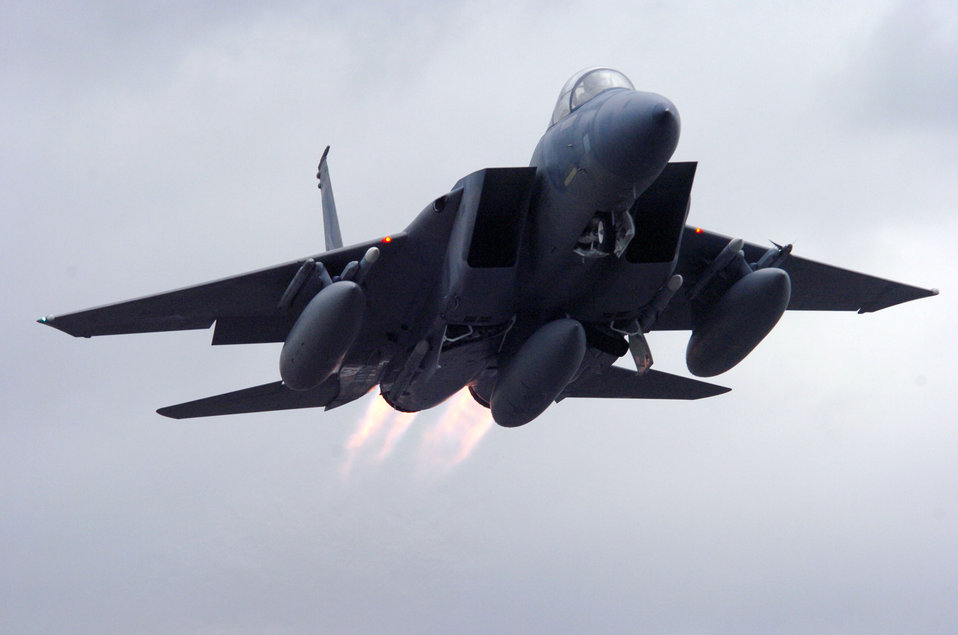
Eagles in Oregon

An F-15 Eagle from the 142nd Fighter Wing takes off from Portland Air National Guard Base in Oregon during an operational readiness inspection on Wednesday, June 14.